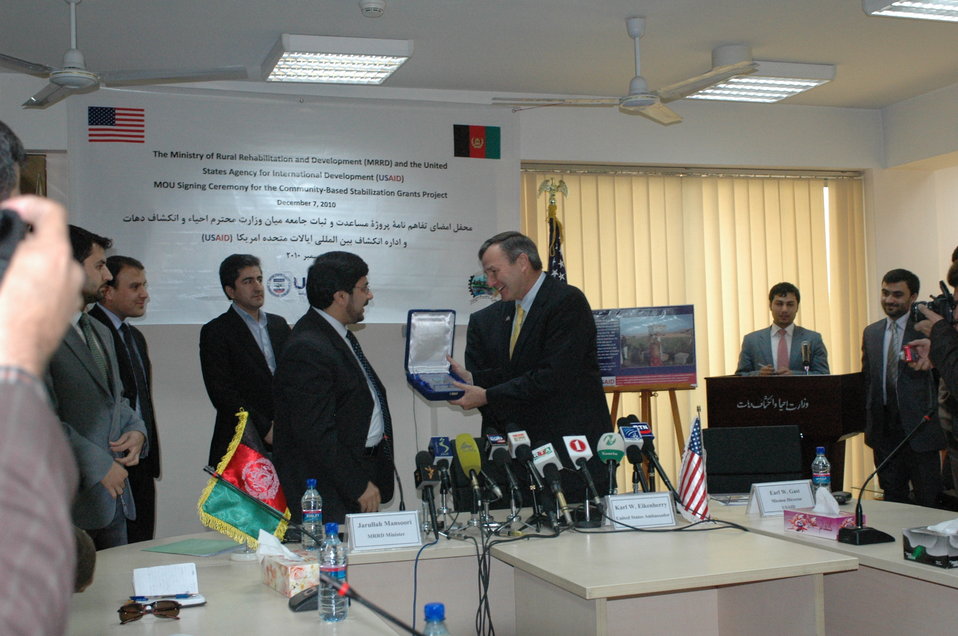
Community Based Stabilization Grants Ceremony, December 7, 2010